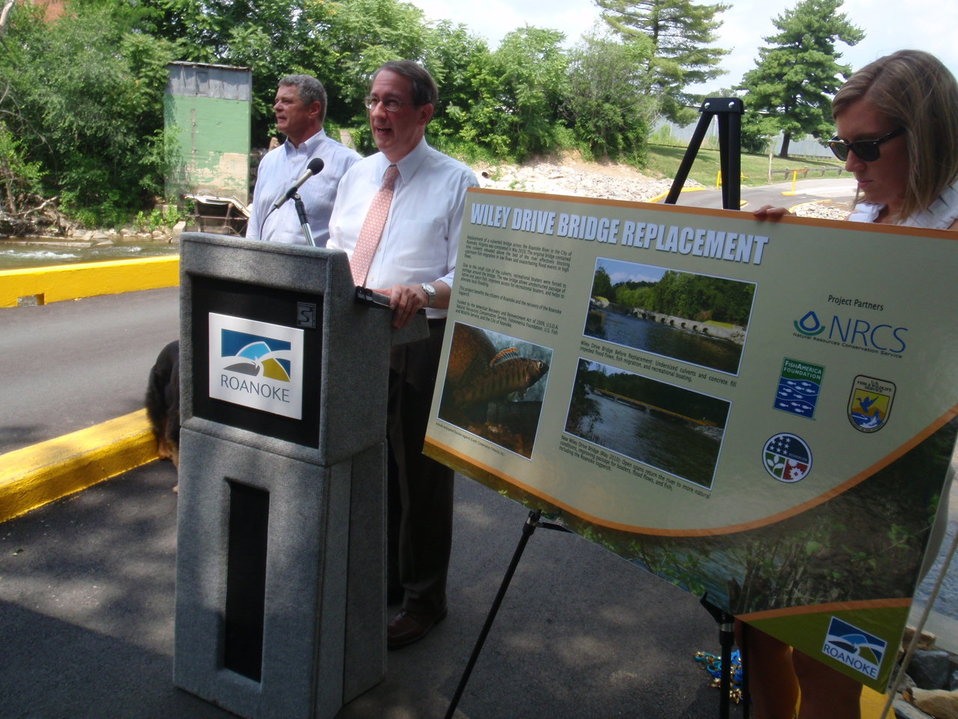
Wiley Drive Project Ribbon Cutting

Congressman Bob Goodlatte and City of Roanoke Mayor David Bowers at the Wiley Drive Bridge Replacement Ribbon Cutting Ceremony.